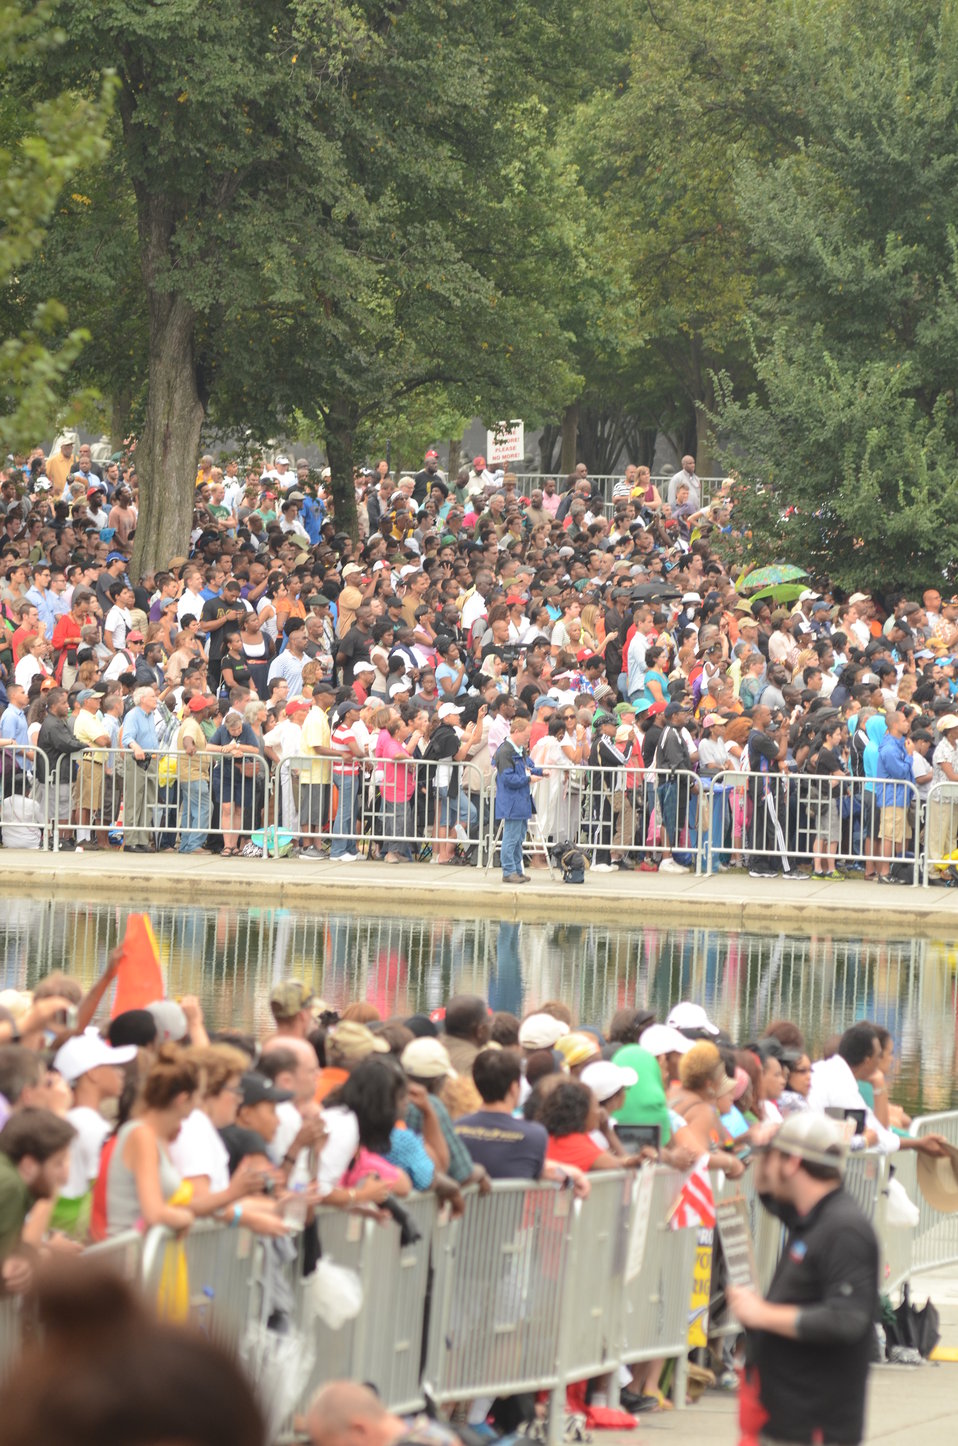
Marchers listen to speakers at the Lincoln Memorial for the March on Washington, D.C., on Wed., Aug. 28, 2013.